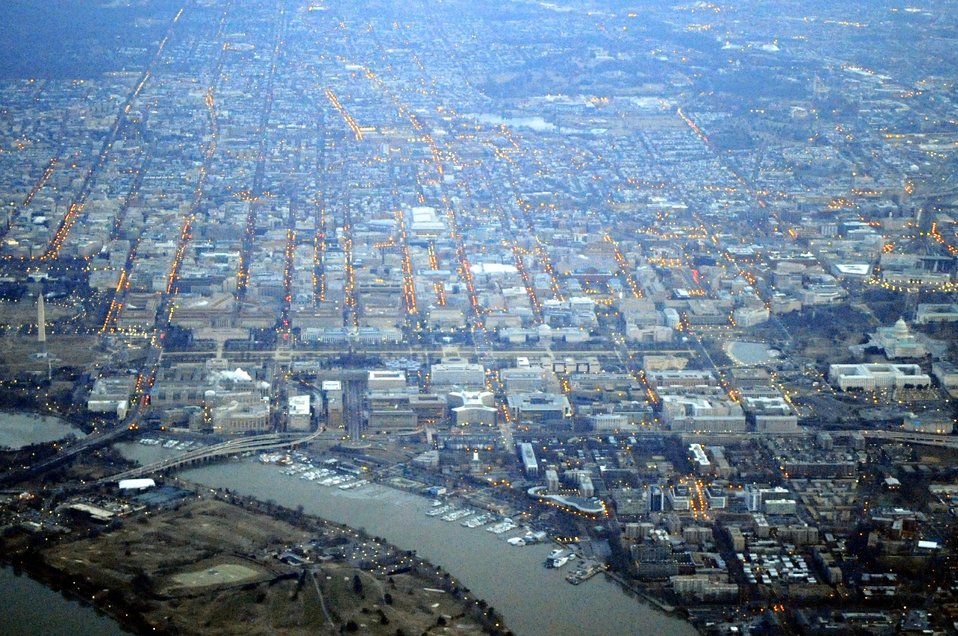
Washington and National Mall As Seen From Secretary Kerry's Plane

A view of Washington, D.C., and the National Mall - from the Washington Monument and White House to the U.S. Capitol - as seen from the aircraft carrying U.S. Secretary of State John Kerry en route to Seoul, Republic of Korea, on February 12, 2014.